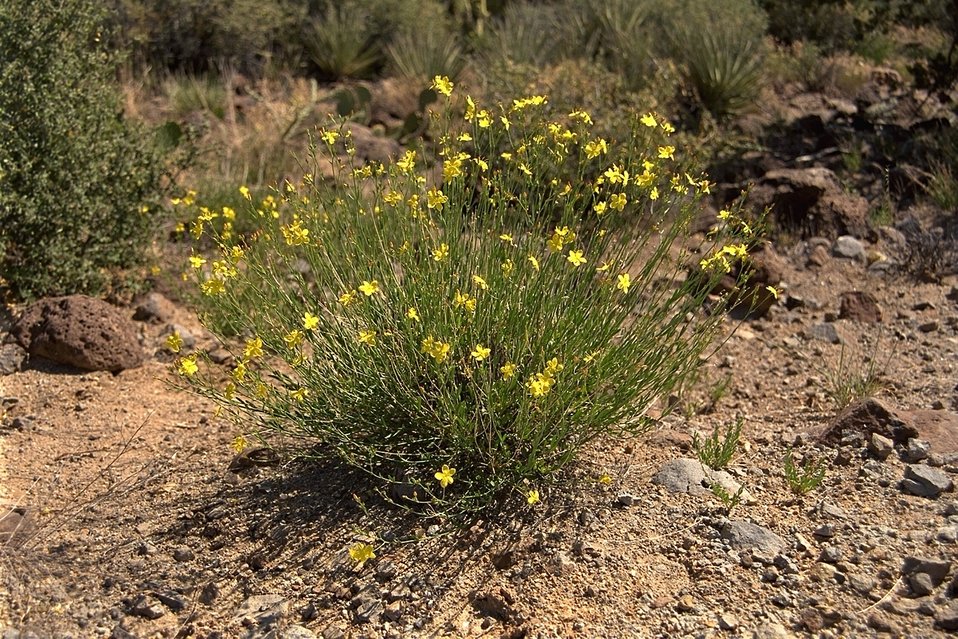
This little weed makes itself acceptable to the eye with its little yellow flowers.